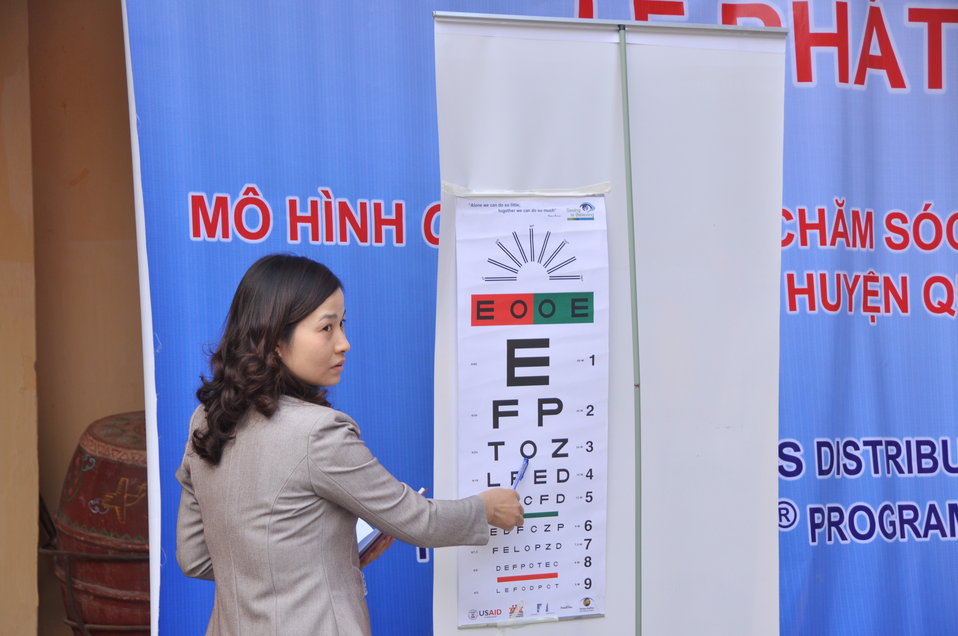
USAID supports distribution of eyeglasses to pupils and teachers in Quoc Oai, Hanoi.

Kieu Phu Junior Secondary School, Quoc Hoai, Hanoi, December 23, 2013.